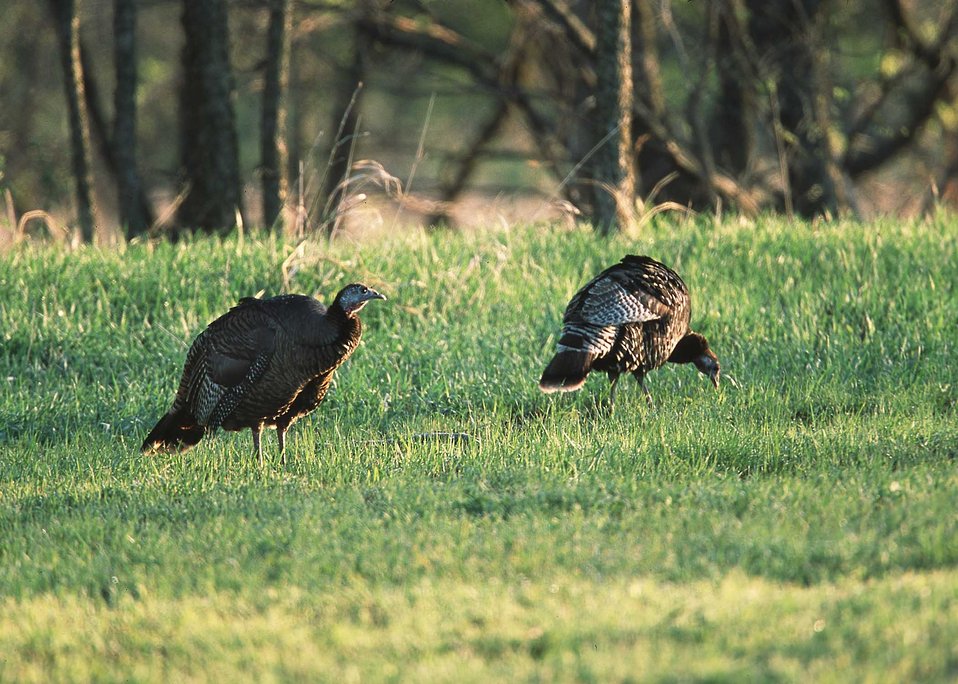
Wild turkeys feeding in wheat field. Kansas.